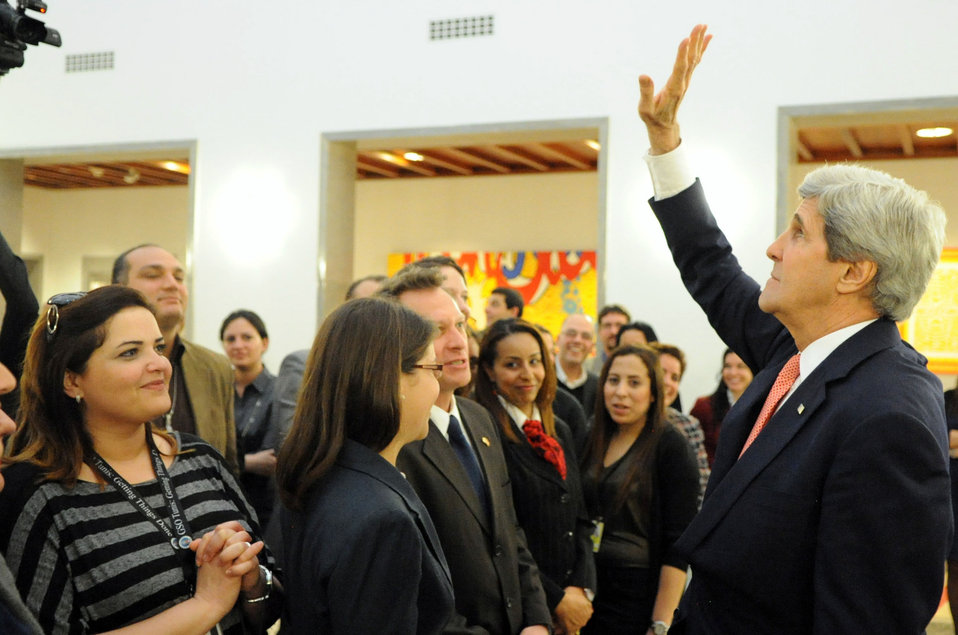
Secretary Kerry Waves to Embassy Tunis Employees in the Balconies

U.S. Secretary of State John Kerry waves to employees standing in the balconies at the U.S. Embassy in Tunis, Tunisia, after thanking them for their work at the conclusion of a visit on February 18, 2014.